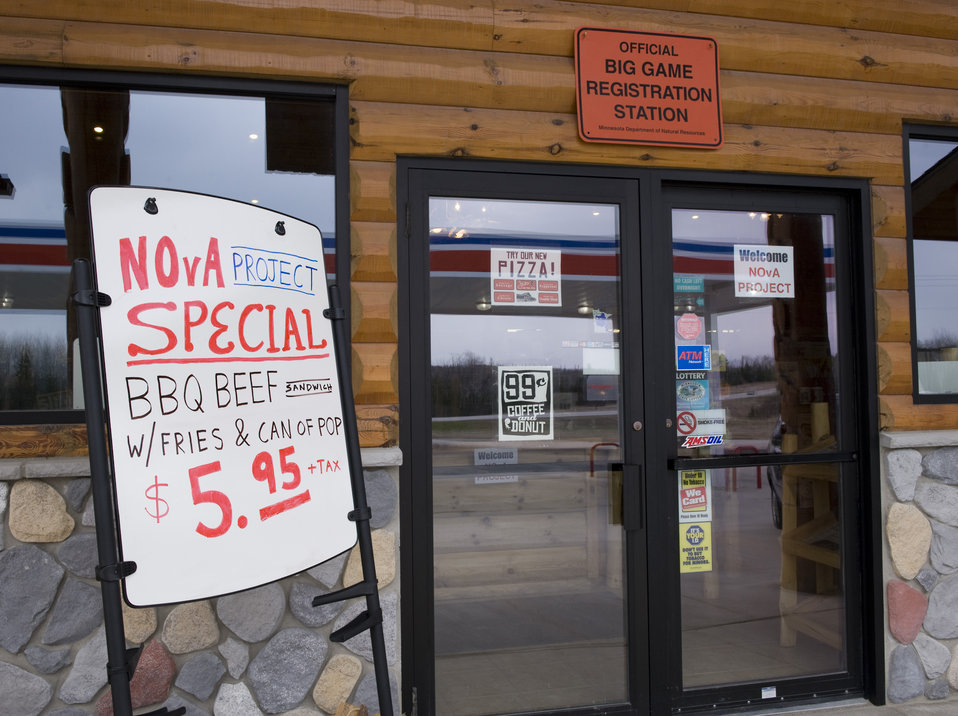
NOvA Project 2

Because of the infusion of workers, the town has seen a trickle-down effect ..stores, hotels, and the town of Orr is doing more business.